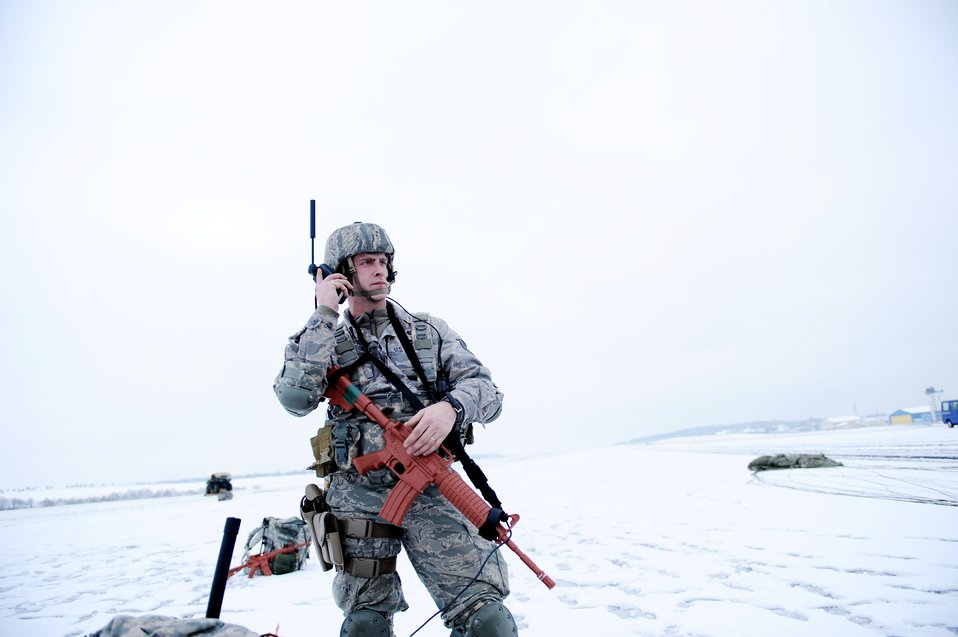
Ramstein forces practice air insertion

Staff Sgt. Ronald Booth, with the 435th Security Forces Squadron at Ramstein Air Base, Germany, provides headquarters with personnel accountability after an insertion mission at Bitburg Airport Jan. 25, 2010. The unit is setting up bare-base operations as part of the dual-wing operational readiness exercise with the 86th Airlift Wing in September.